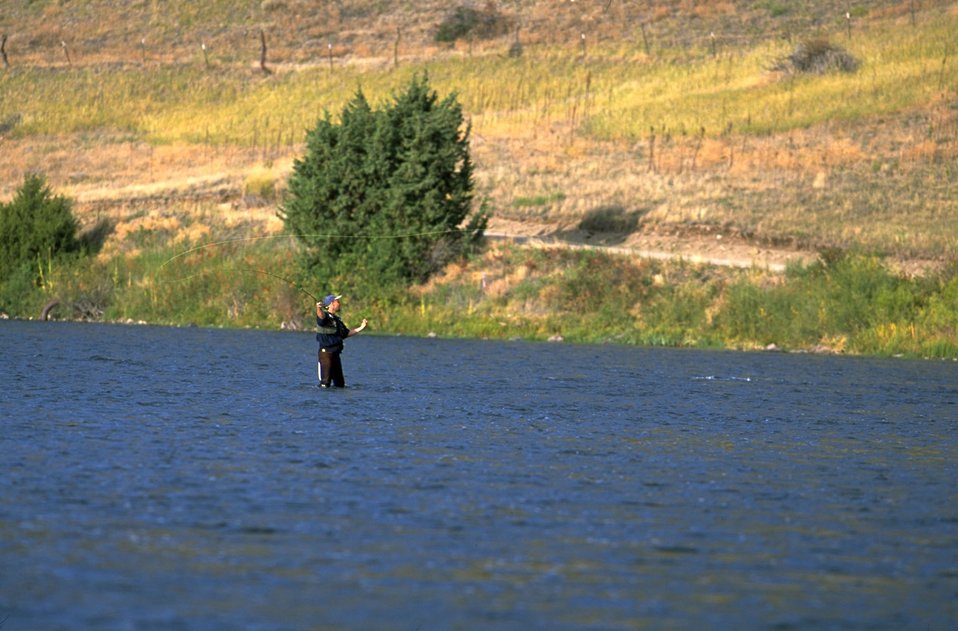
Fishing on the Madison